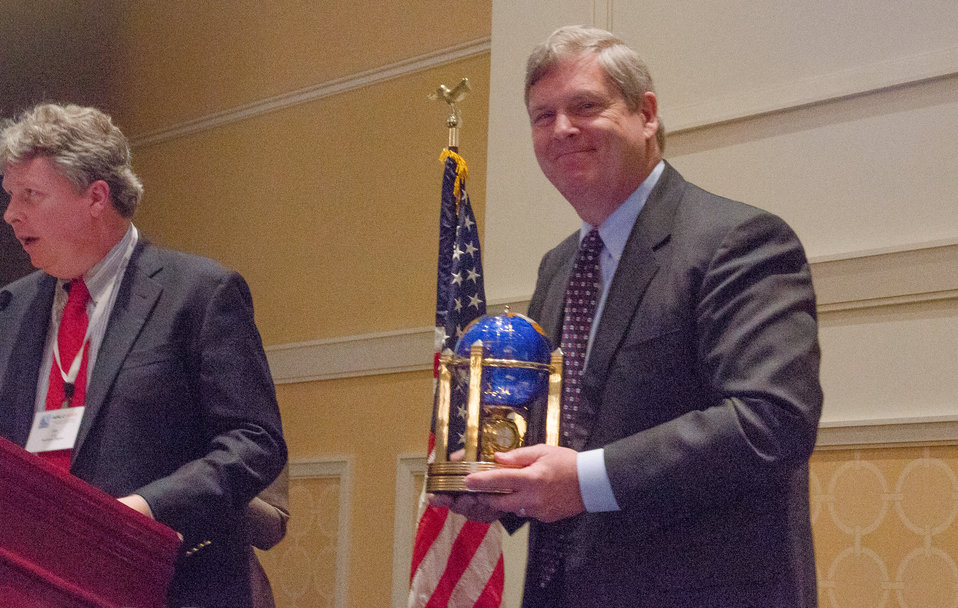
U.S. Department of Agriculture Secretary Tom Vilsack smiles after Biofuels Digest Publisher and Editor Jim Lane presented him with the Global Biofuels Leadership Award for bringing food, fiber, feed and fuel for all, during the Advanced Biofuels Leadership Conference at Gaylord National Harbor in Maryland, Monday, April 15, 2013. He holds the commemorative award.